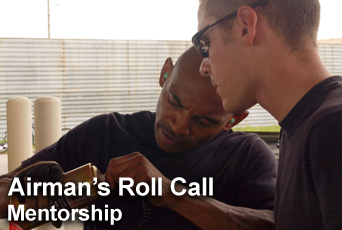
Airman's Roll Call highlights mentorship

This week's Airman's Roll Call highlights mentoring to prepare Airmen for increased responsibilities as they progress in their careers.